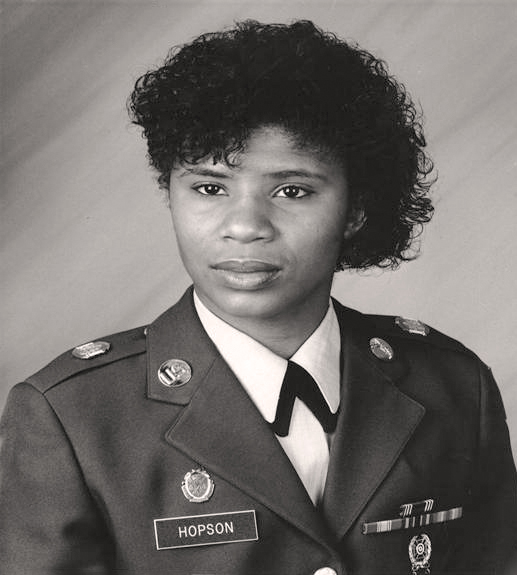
Jolyn Hopson, a Program Support Specialist in the Office of International Affairs, served in the Army from December 1985 to April 1996. She served Fort Hood, Texas, as a Medical Supply Specialist; Fort Leavenworth, Kansas, as a Military Police/Correctional Officer; and Fort Myers and Fort Belvoir, Virginia, as a Criminal Investigator. She attained a rank of sergeant (E-5).